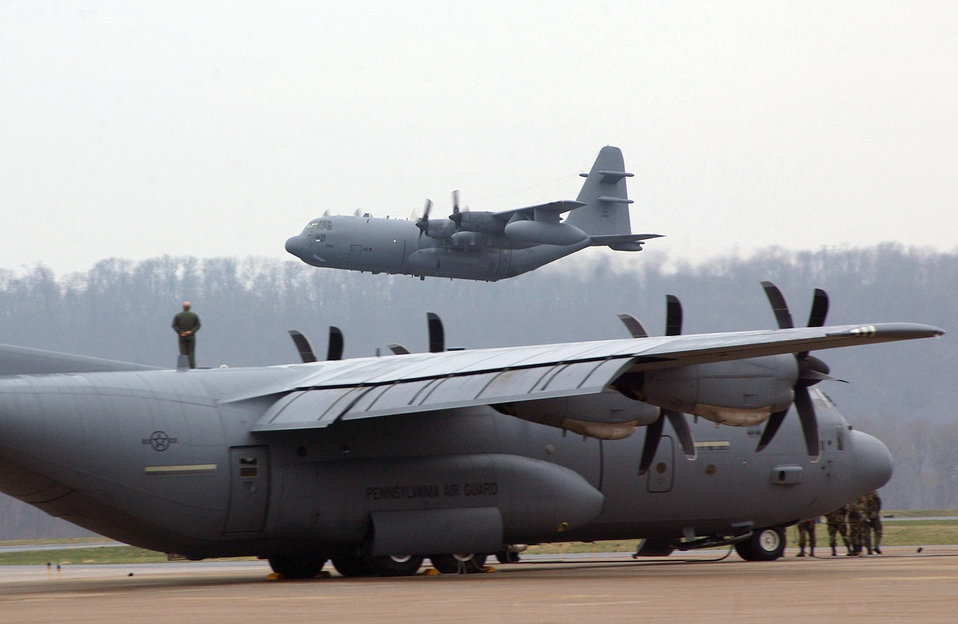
Commando Solo

The last Air National Guard's EC-130E Commando Solo takes off above a C-130 Hercules for the final time at the Harrisburg International Airport on Monday, April 3, 2006. The